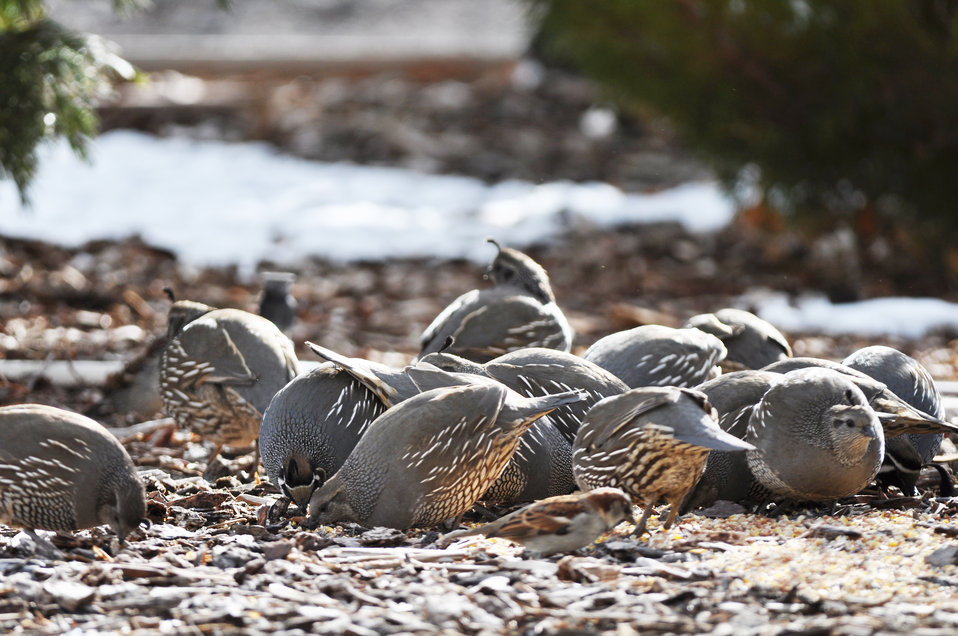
California quail photos taken in Gardnerville, NV